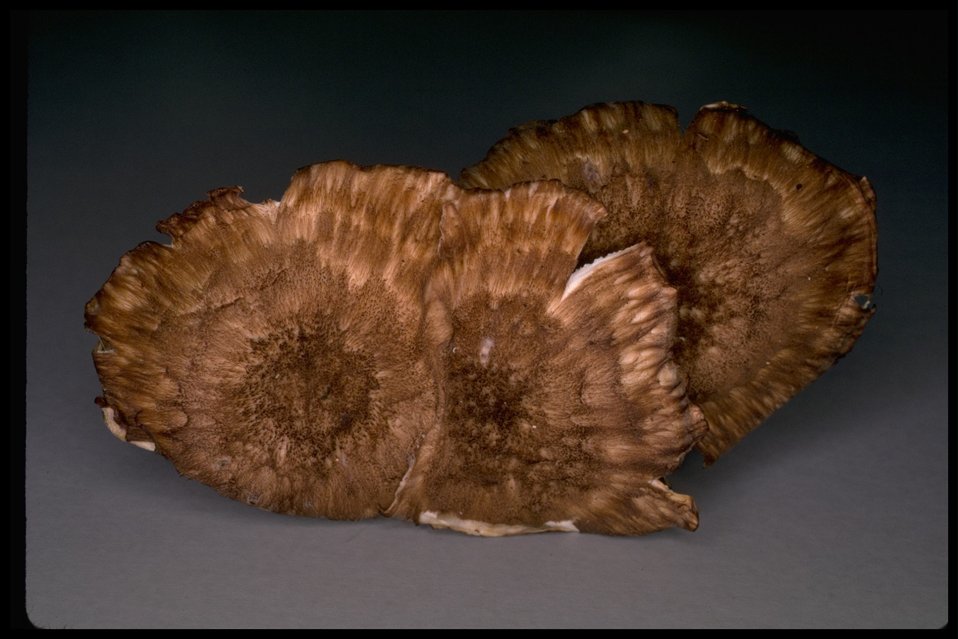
Medium shot of Bondarzewia (Bondarzewia mesenterica).